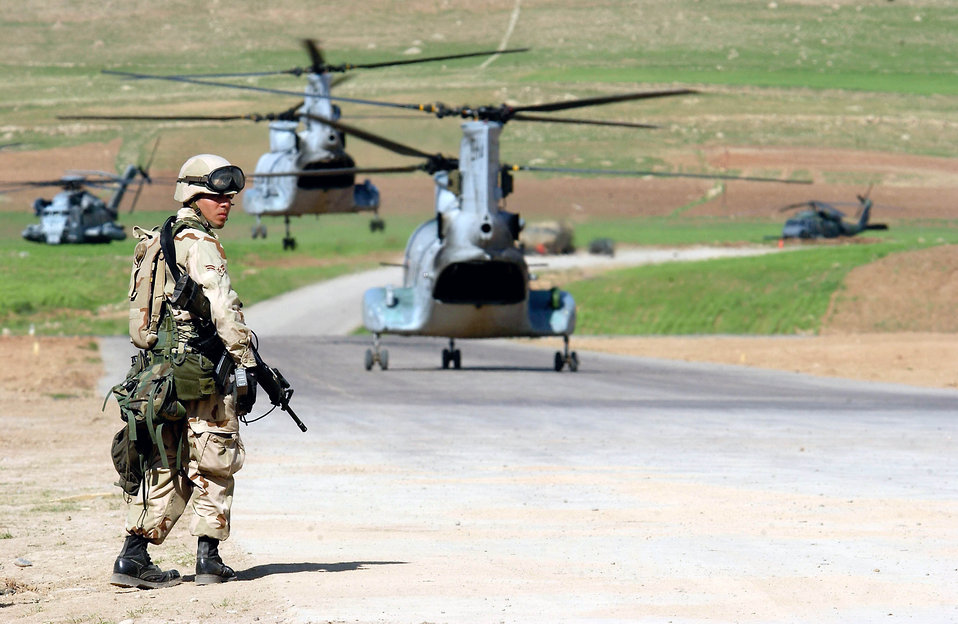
Helping out the Marines

OPERATION IRAQI FREEDOM -- Airman 1st Class Angel Aguila, a security forces troop from the 86th Security Forces Squadron, Ramstein Air Base, Germany, guards an entry control point at Bashur Airfield, Iraq. In the background, Marine Corps CH-46 and HH-53 helicopters -- which are beginning to bring 26th Marine Expeditionary Unit Marines to the base -- taxi for takeoff.